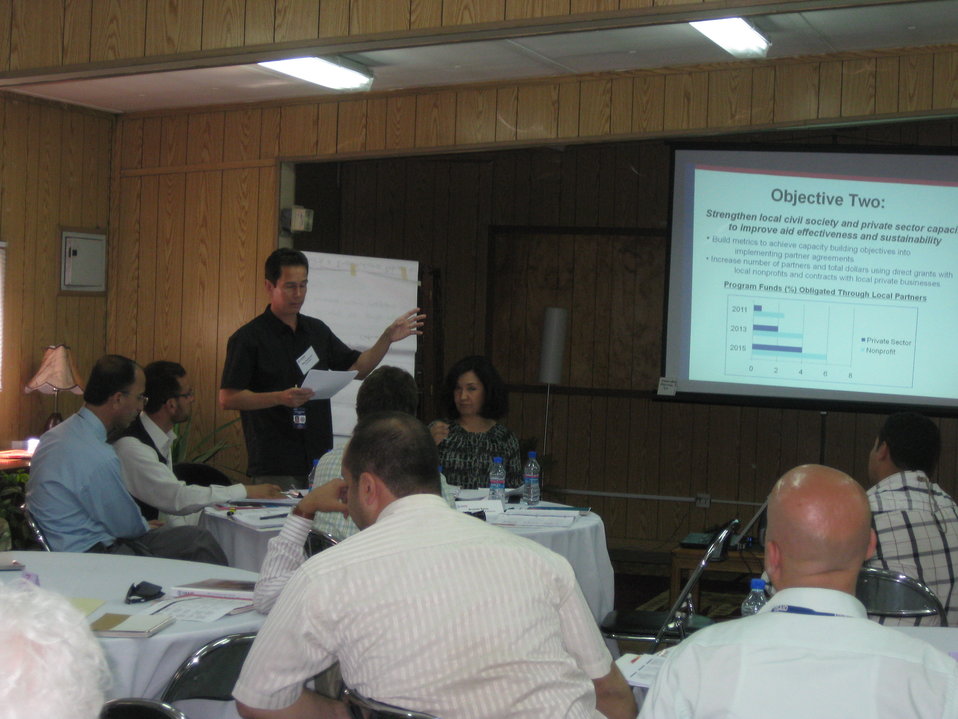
Afghan Youth Voices 021